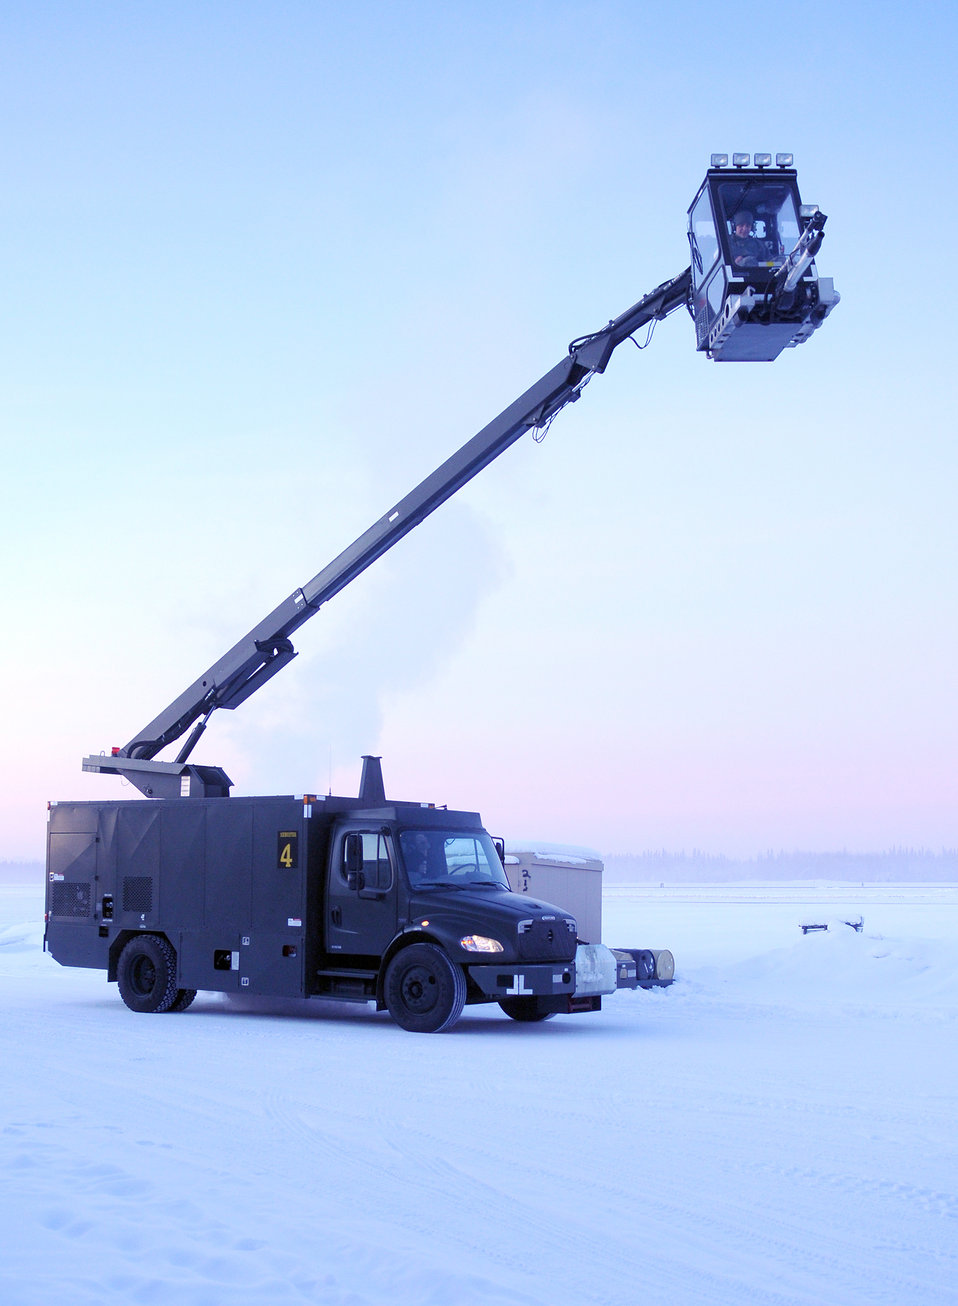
Eielson AFB AGE

A de-icer operator checks lift controls Feb. 16, 2011, at Eielson Air Force Base, Alaska. The operators are assigned to the 354th Maintenance Squadron aerospace ground equipment flight.